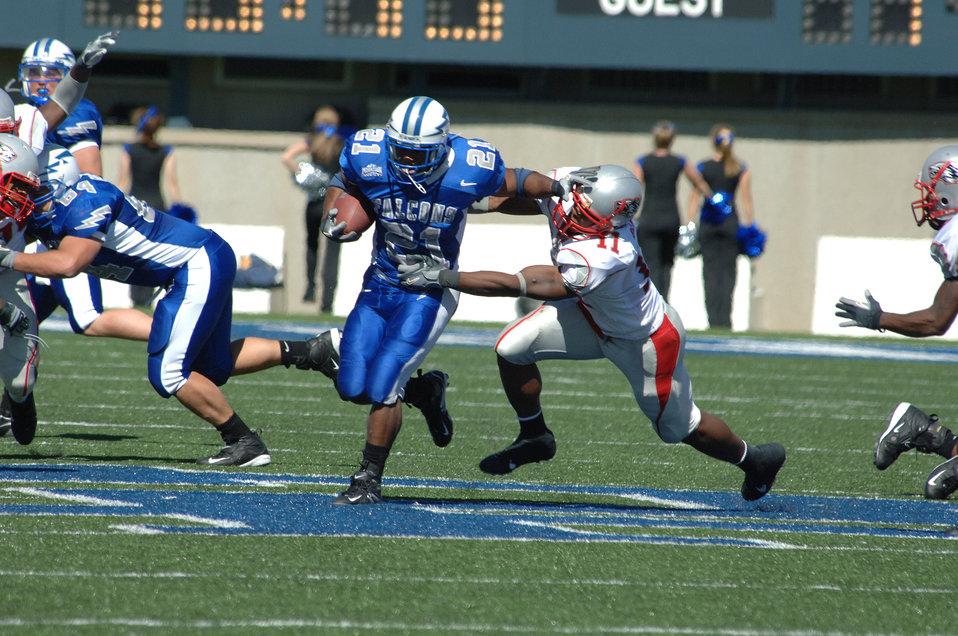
Air Force beats New Mexico 24-7

Air Force fullback Ryan Williams stiff-arms New Mexico defender Quincy Black as he runs for extra yardage up the middle in their Sept. 30 game. The Falcons fullback gained 94 yards and one touchdown on 22 carries, in their 24-7 victory over New Mexico.